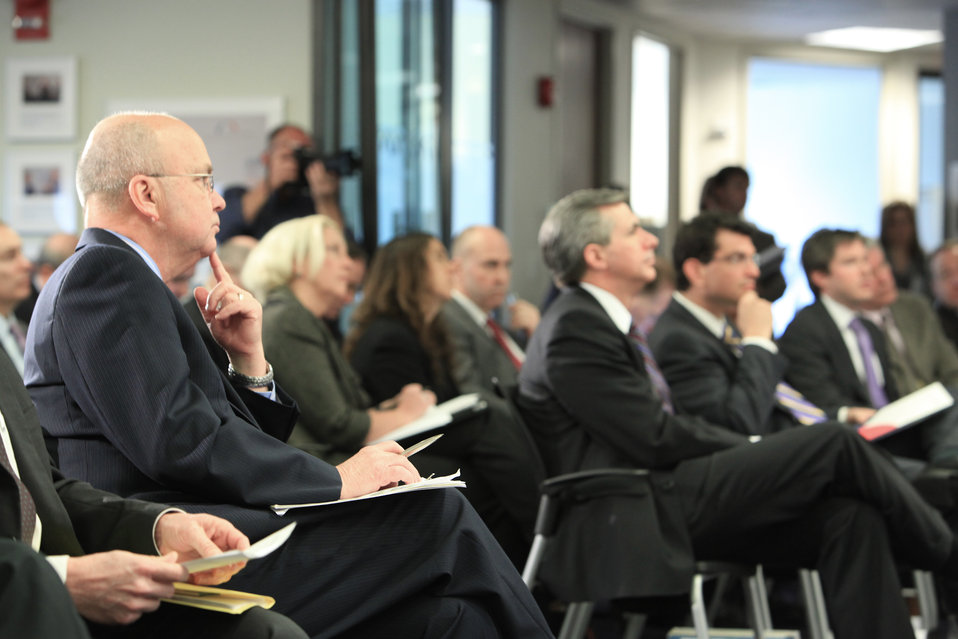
General (Ret.) Michael Hayden listens to FCC Chairman Genachowski's speech on Cybersecurity

General (Ret.) Michael Hayden, Former Director, CIA and NSA listens to FCC Chairman Genachowski speak about Cybersecurity at the Bipartisan Policy Center in Washington, DC, on February 22, 2012.